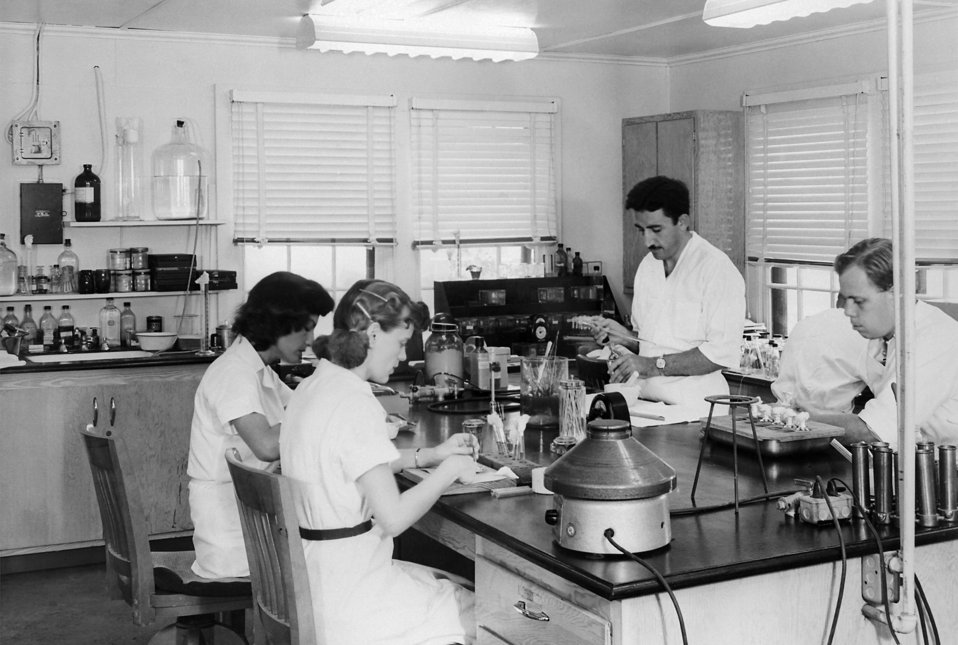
CDC lab technicians conducting virus research.